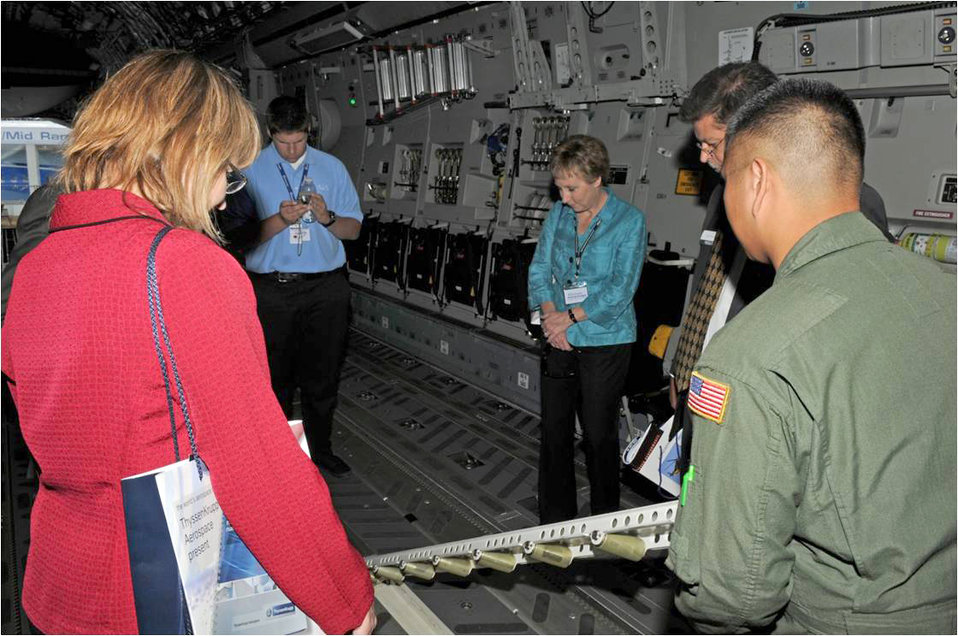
Farnborough 2010

Spectators tour the cargo bay of a C-17 Globemaster III from Travis Air Force Base, Calif., July 20, 2010, in Farnborough, England. Eleven U.S. military aircraft and approximately 70 personnel representing all branches of service participate in the 2010 Farnborough International Air Show.